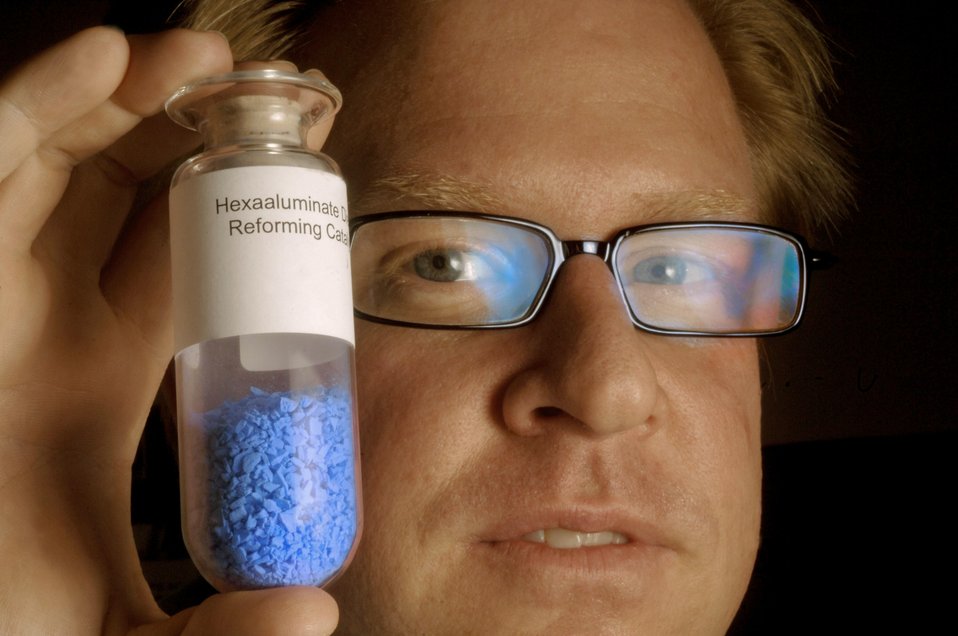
Researcher Todd Gardner holds a hexaaluminate reforming catalyst developed at DOE'S National Energy Technology Laboratory to reform diesel fuel into hydrogen for fuel cells.

NETL has established the Fuel Processing Laboratory to study catalysts that can be used in reforming. The research is using synchrotron radiation at the National Synchrotron Light Source (NSLS) at Brookhaven National Laboratory to investigate the properties of catalysts that could be used diesel fuel reforming, and perhaps also as efficient catalysts for carbon dioxide-methane reforming. Synchrotron radiation is produced when electrons are accelerated to near the speed of light. Researchers use it to investigate fundamental properties of materials. Hexaaluminate catalysts are unique materials. Their structure controls the formation of metallic clusters on the surface of the catalyst. This property can be exploited to control the deposition of carbon onto the catalyst's surface during catalytic reaction.